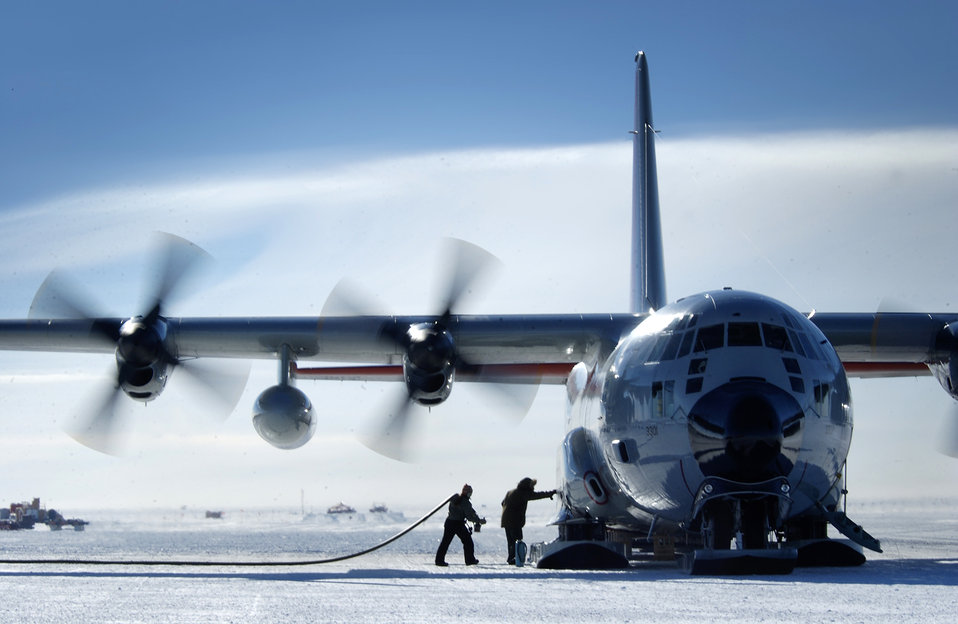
Operation Deep Freeze sees end of C-141 era

ADMUNSEN-SCOTT SOUTH POLE STATION, Antarctica -- An Air National Guard LC-130H Hercules sits while crews unload fuel and cargo here during a recent mission. The LC-130H is equipped with ski-landing gear that allows the aircraft to land on ice or snow while airlifting supplies to remote locations throughout the Antarctic continent.